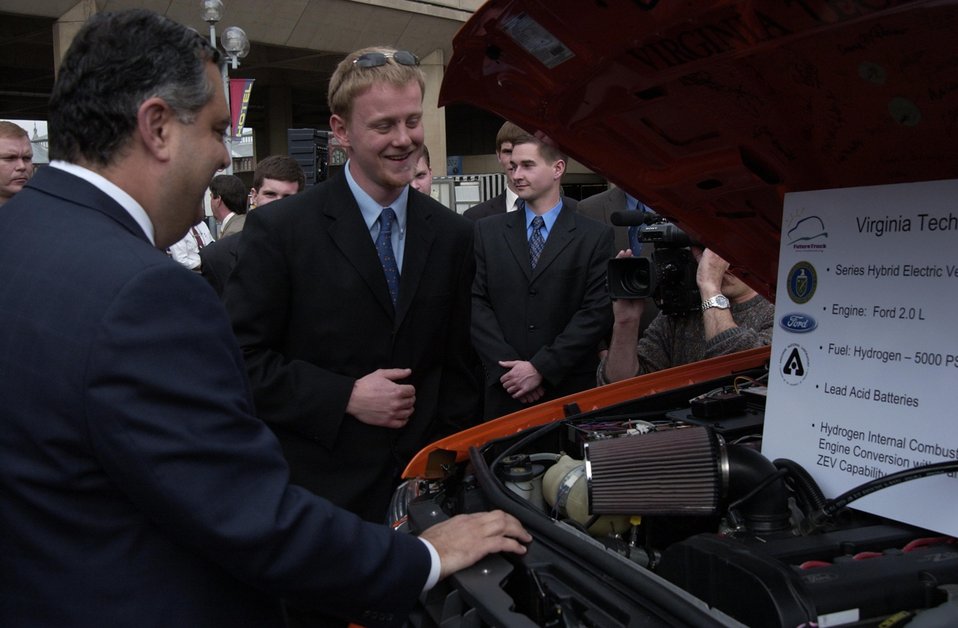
STUDENT DESCRIBING THE VIRGINIA TECH RE-ENGINEERED VEHICLE TO SECRETARY ABRAHAM.

ON MARCH 24, 2004, SECRETARY OF ENERGY ABRAHAM AND THE FORD MOTOR COMPANY HOSTED SEVEN STUDENT DESIGNED ENERGY EFFICIENT SPORT UTILITY VEHICLES (SUVS) PARKED OUTSIDE OF DOE HEADQUARTERS IN WASHINGTON, DC. THE STUDENT TEAMS, PART OF THE FUTURE TRUCK 2004 ENGINEERING COMPETITION, RE-ENGINEERED FORD EXPLORERS TO ACHIEVE LOWER-EMISSIONS AND AT LEAST 25% HIGHER FUEL ECONOMY, WITHOUT SACRIFICING PERFORMANCE, UTILITY AND SAFETY. THE UNIVERSITIES THAT PARTICIPATED WERE OHIO STATE, PENN STATE, MARYLAND, TENNESSEE, WISCONSIN-MADISON, VIRGINIA TECH AND WEST VIRGINIA.